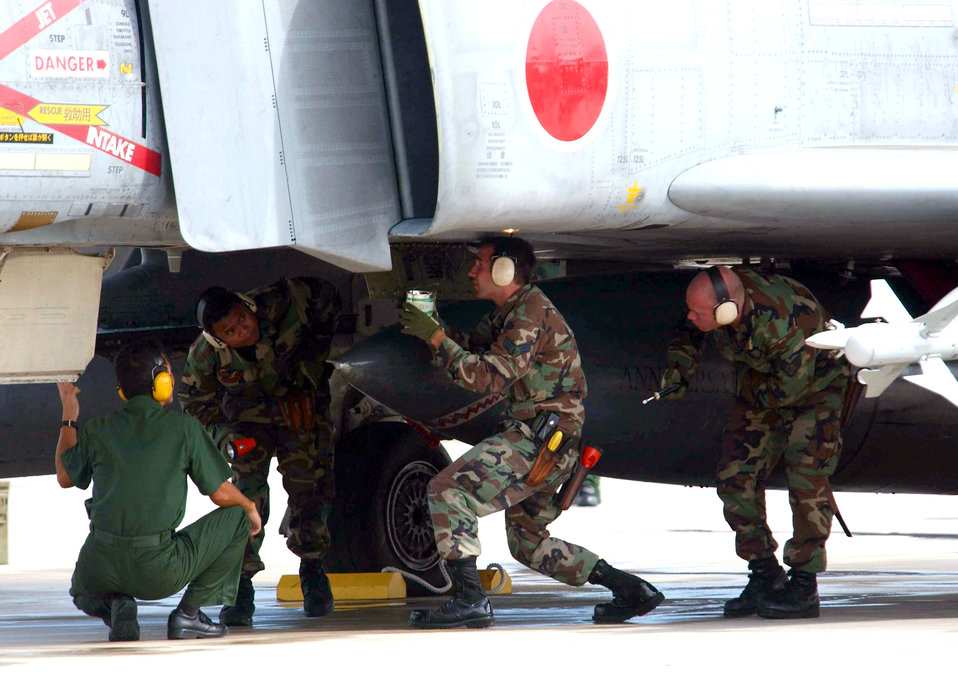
Exercise Cope North

ANDERSEN AIR FORCE BASE, Guam -- (From left) Staff Sgt. Lucindo Margallo, Senior Airman Joseph Dombroski and Staff Sgt. Michael Wiest check on a Japanese air self-defense force F-4 jet here with Japanese Tech. Sgt. Hidinero Miyazaki. Margallo, Dombroski and Wiest are crew chiefs from the 67th Aircraft Maintenance Unit at Kadena Air Base, Japan. Miyazaki is a crew chief from the 83rd Wing at Naha Air Base, Japan.